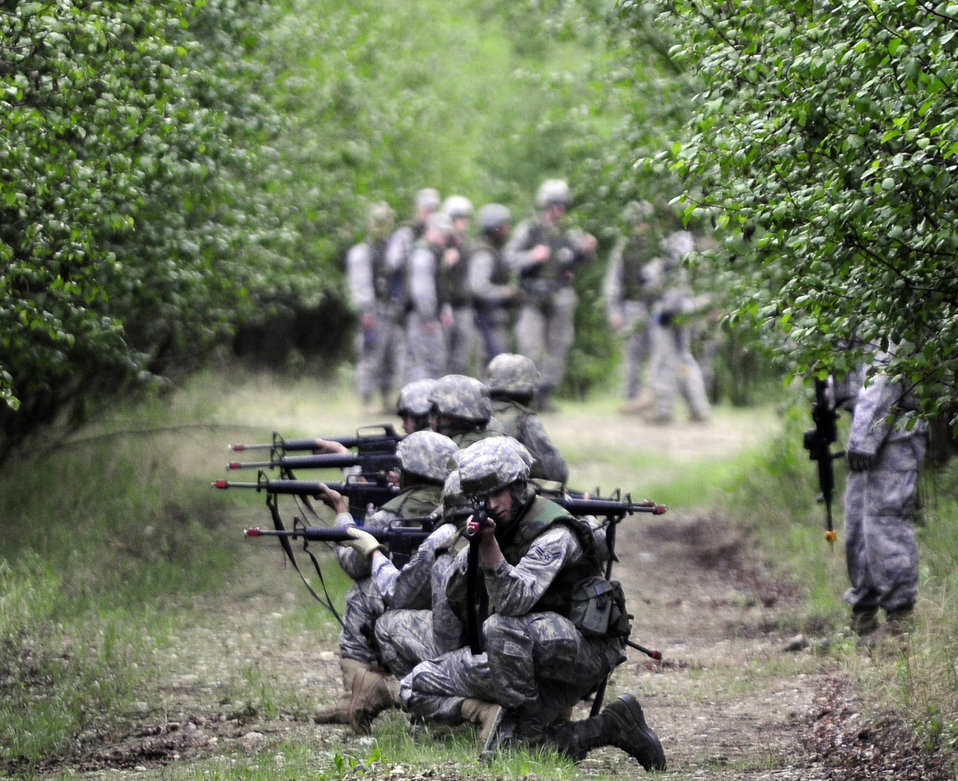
Dismounted patrol preparedness exercise

Airmen participate in a dismounted patrol preparedness exercise June 2, 2011, at Eielson Air Force Base, Alaska.